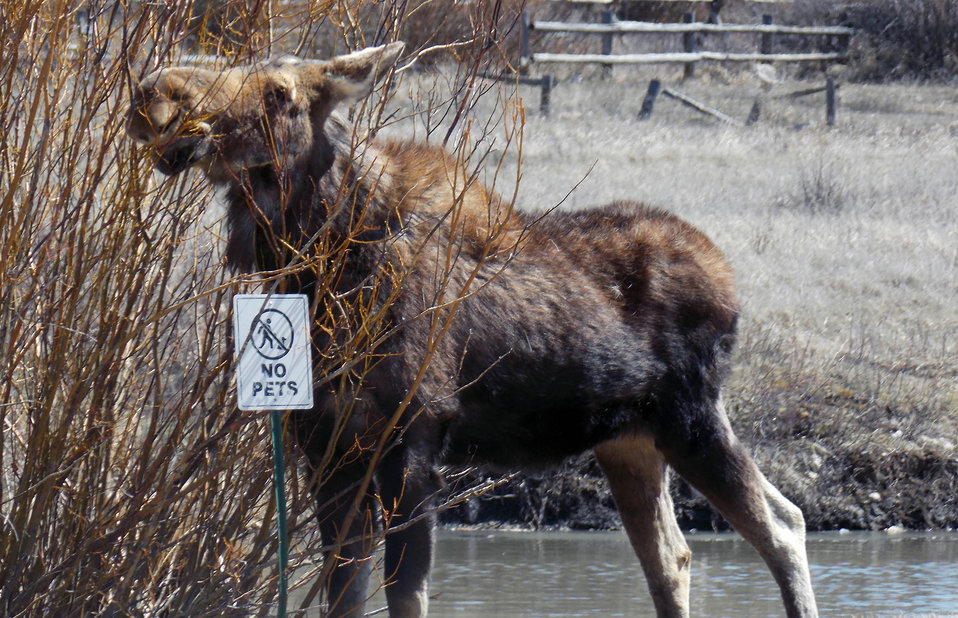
Not Domesticated

A moose at the National Elk Refuge visitor center asserts that it's not domesticated.

Credit: USFWS / winter volunteer